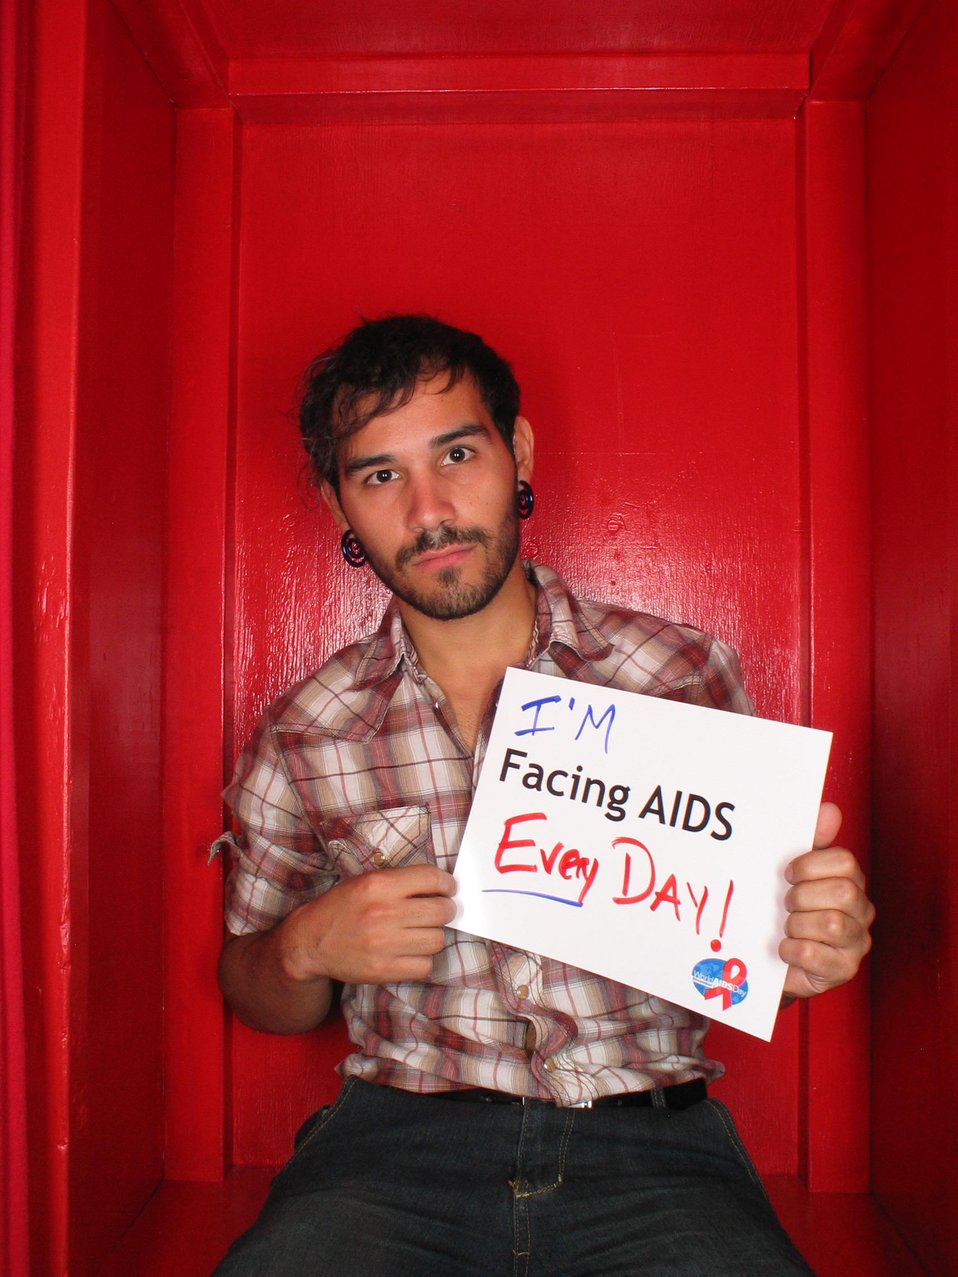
I'm Facing AIDS everyday!